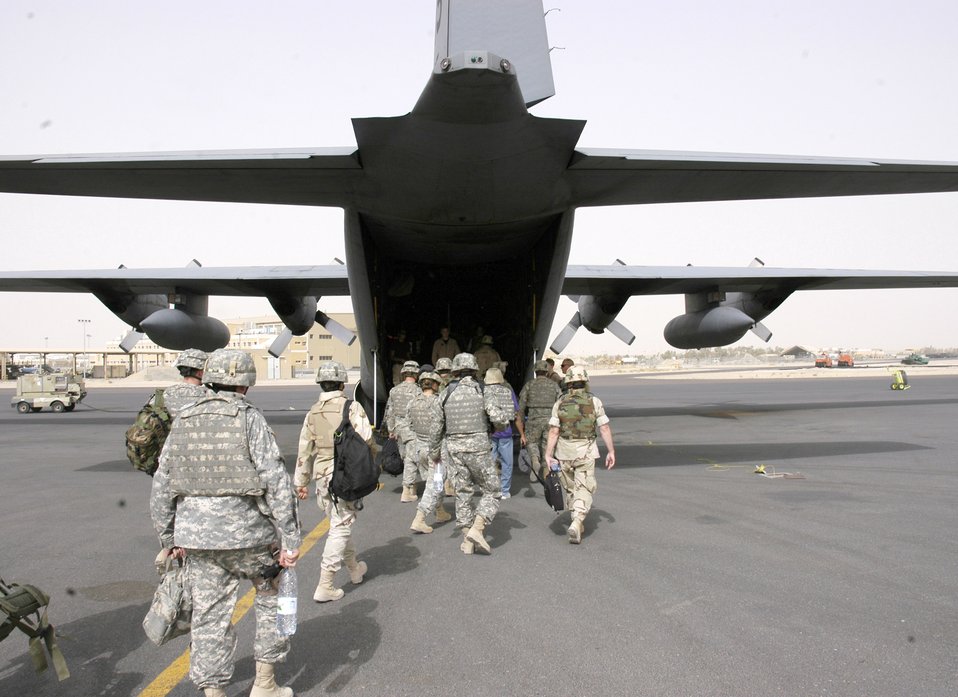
Airlift support

Servicemembers and civilians board a C-130 Hercules heading to Iraq from the home of the 386th Air Expeditionary Wing in Southwest Asia. The 386th AEW is the primary aerial hub for Operation Iraqi Freedom and provides airlift support for Operation Enduring Freedom and the Horn of Africa. The 386th AEW is composed of more than 3,400 Airmen from the National Guard, Air Force Reserve and active duty.